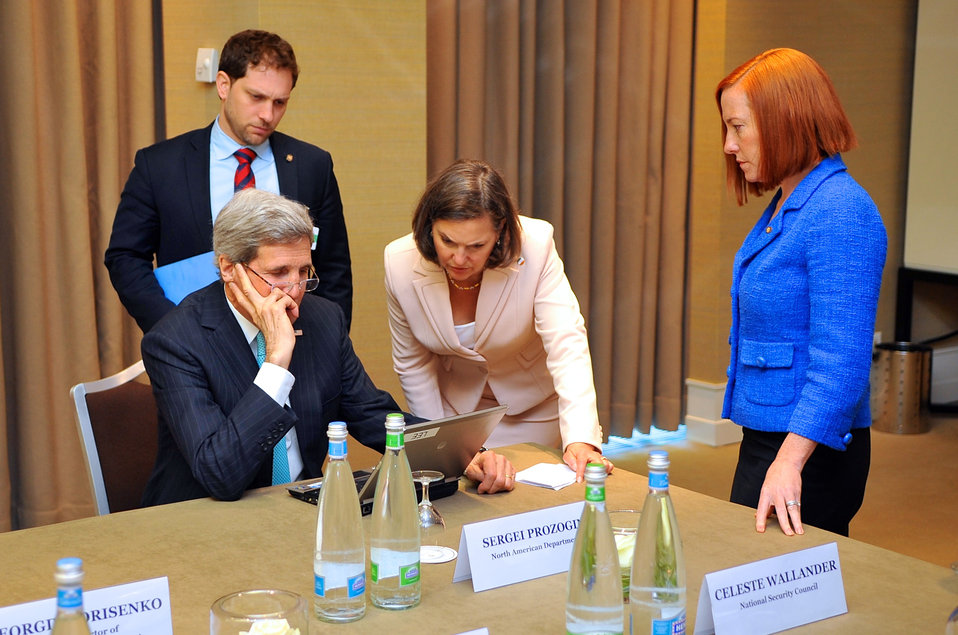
Secretary Kerry Reviews Draft Statement Amid Ukraine Talks in Geneva

U.S. Secretary of State John Kerry reviews a draft statement with Deputy Chief of Staff Jon Finer, Assistant Secretary for European and Eurasian Affairs Toria Nuland, and Spokesperson Jen Psaki before the start of meetings in Geneva, Switzerland, on April 17, 2014, with Russian, Ukrainian, and European Union officials about Ukraine.